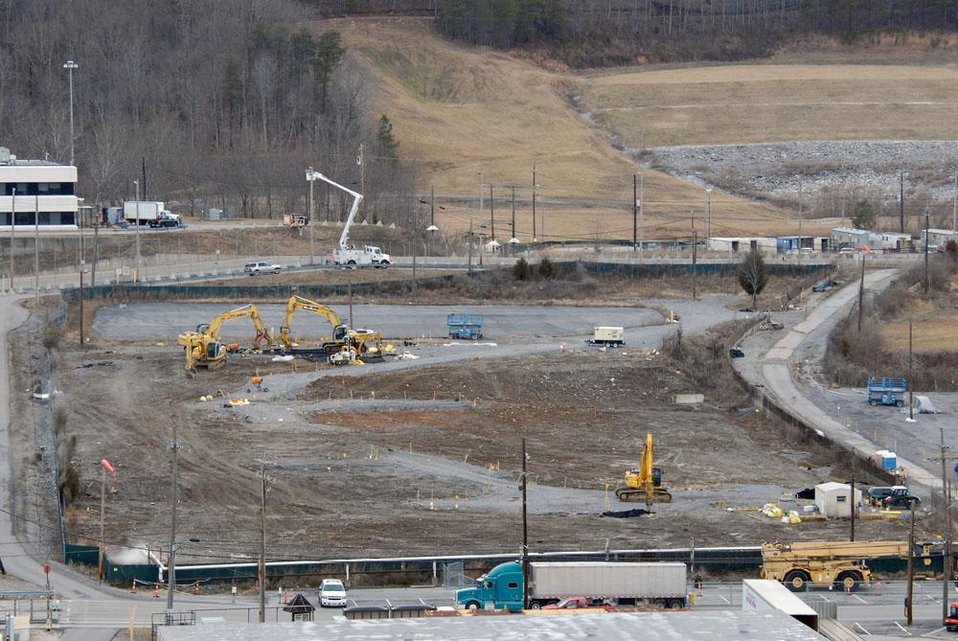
After Photo Old Salvage Yard

With Recovery Act funds, the Y-12 National Security Complex was able to clear the seven-acre Old Salvage Yard. The scrap yard contained scrap metal from decades of past operations.